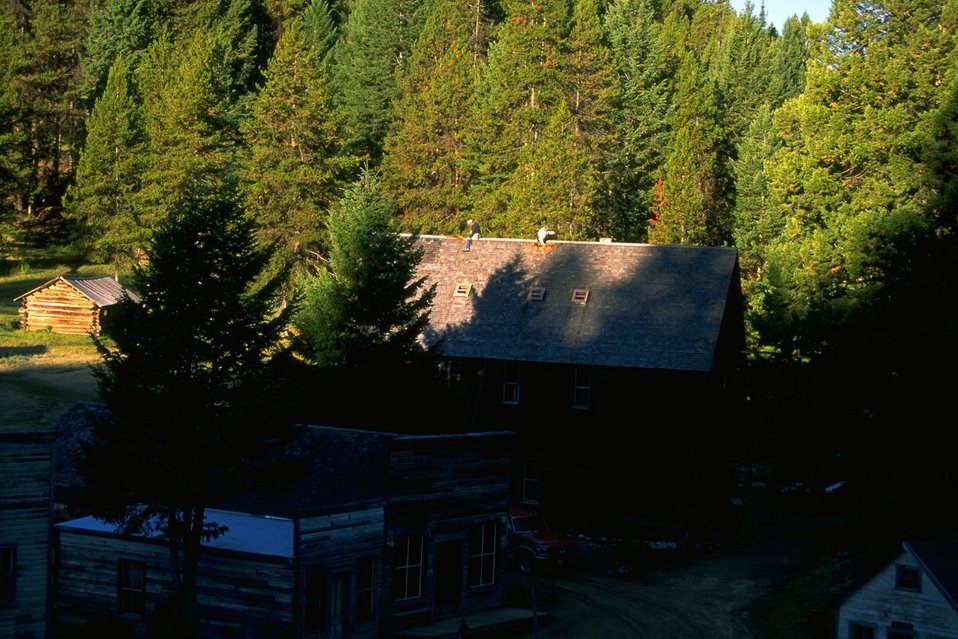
Garnet Ghost Town--stabilizing historic structure